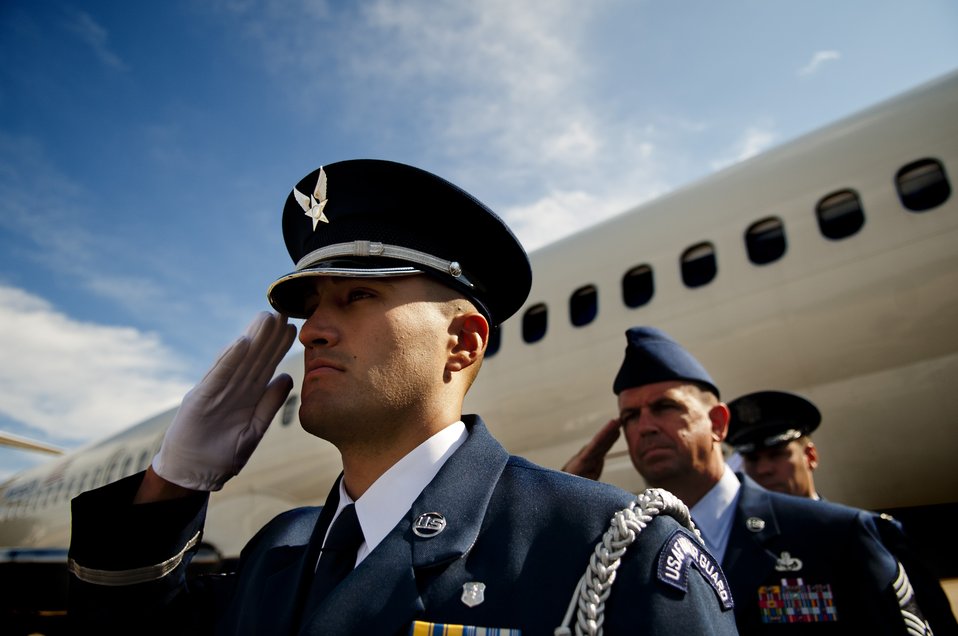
Salutes rendered

Chief Master Sgt. Sean Applegate, middle, and Col. John Devillier, right, salute while the remains Col. Wendell Keller, of Fargo, N.D., and Capt.Virgil K. Meroney, of Fayetteville, Ark., depart in a hearse from Ronald Reagan Washington National Airport Oct. 18, 2012. The U.S. Air Force Honor Guard and family members were present at the arrival. March 1, 1969, Keller and Meroney were the crew of an F-4D Phantom II aircraft that went down while carrying out a night time strike mission in Khammouan Province, Laos. Nearby aircrews reported seeing the aircraft hit by enemy fire. No parachutes were seen after the aircraft was hit. Heavy enemy presence in the area prevented recovery efforts. Between 1994 to 2011, the